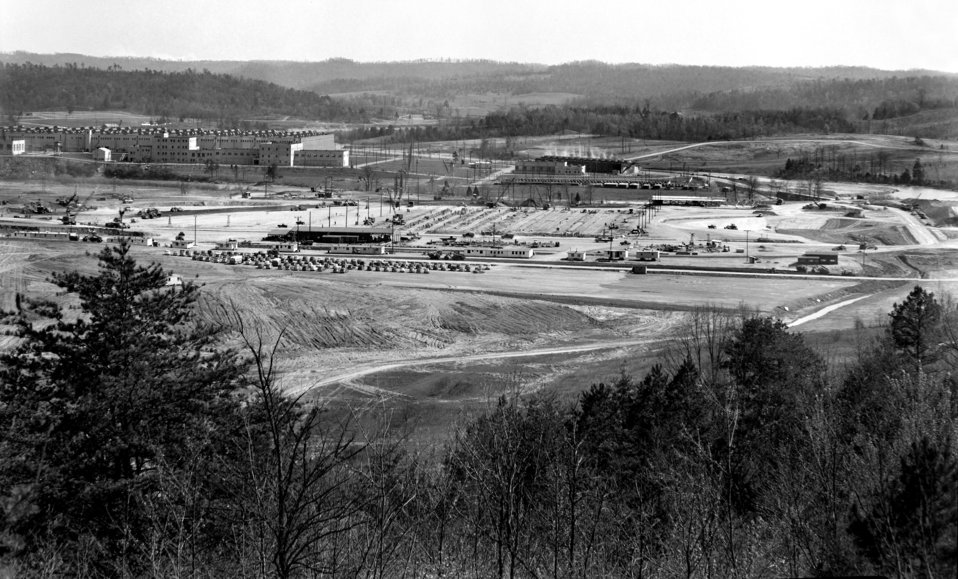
K-31 Project 1950 Oak Ridge

5866 DOE photo Ed Westcott 4-12-1950 Oak Ridge Tennessee